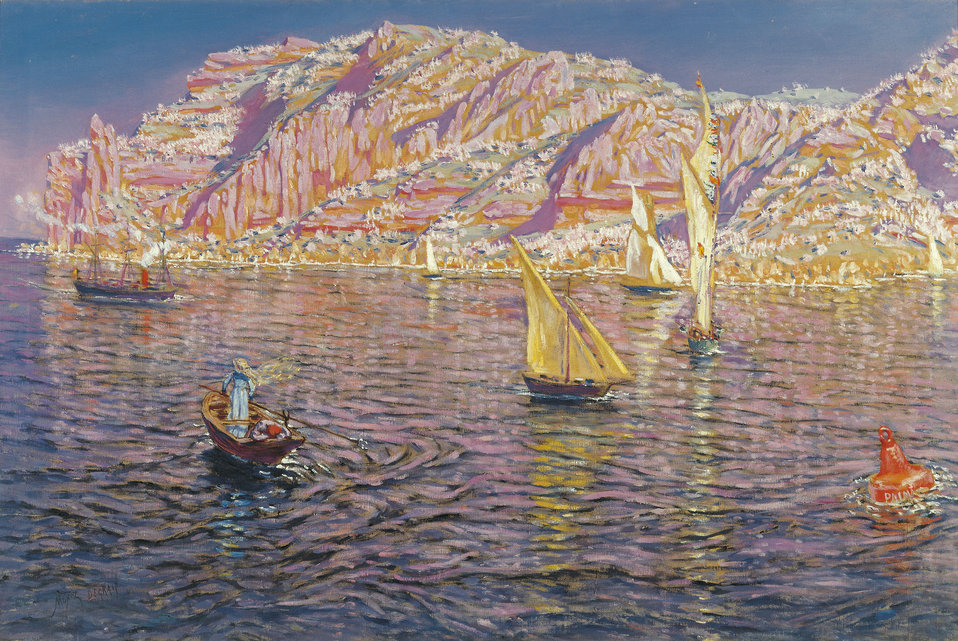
Seascape View of Palma de Mallorca. Oil on canvas, 89 x 133.5 cm, Inv. CTB.1996.53 Museo Carmen Thyssen Native name Museo Carmen Thyssen Location Málaga, Spain Coordinates 36° 43′ 17″ N, 4° 25′ 22″ W Established 2011 Website www.carmenthyssenmalaga.org